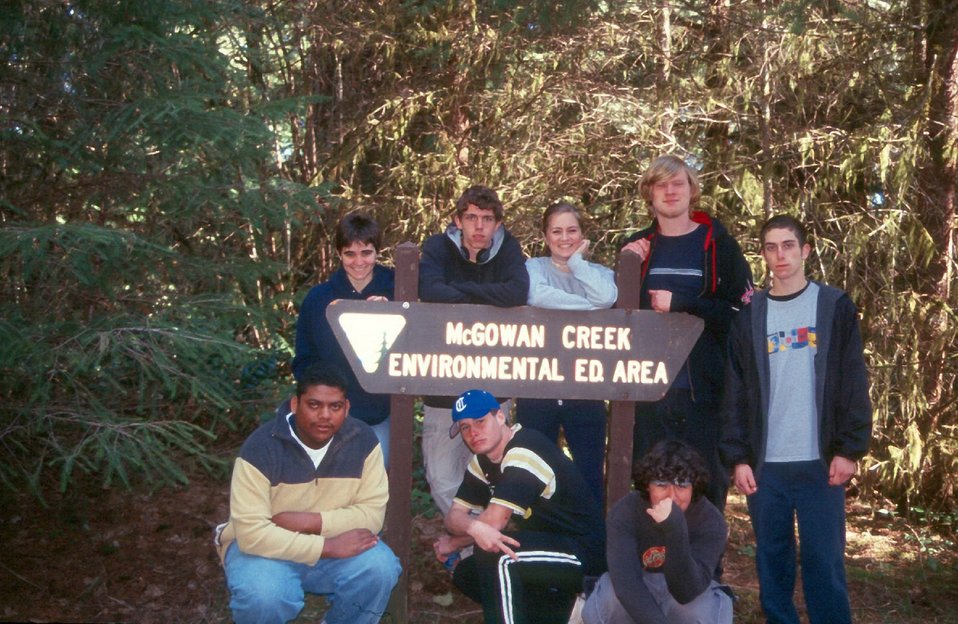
Boy Scouts from Eugene Troop 100 who installed an interpretive Kiosk at Clay Creek Recreation Site.